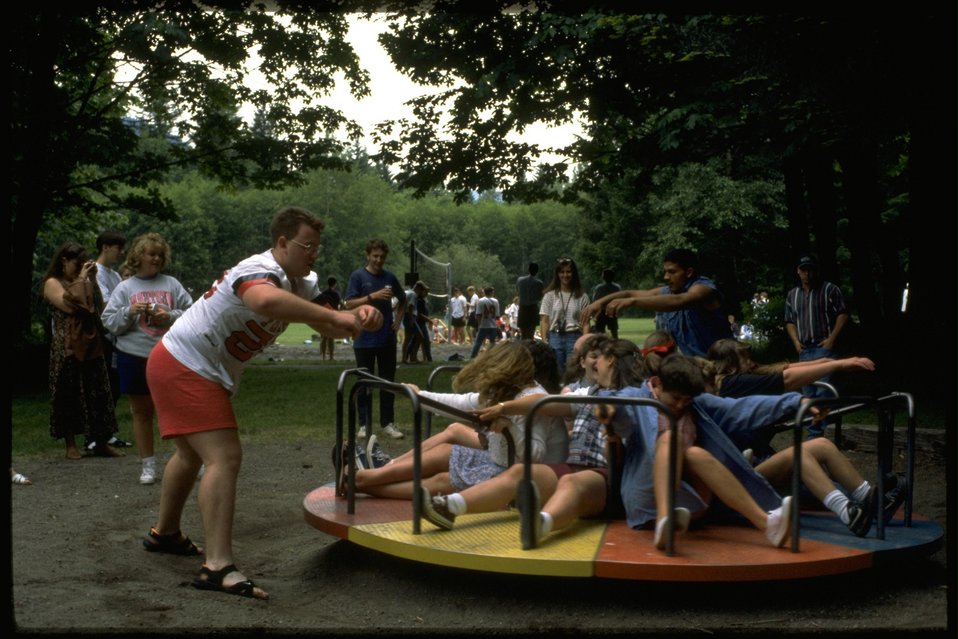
Many people enjoying the Wildwood Recreational Area.